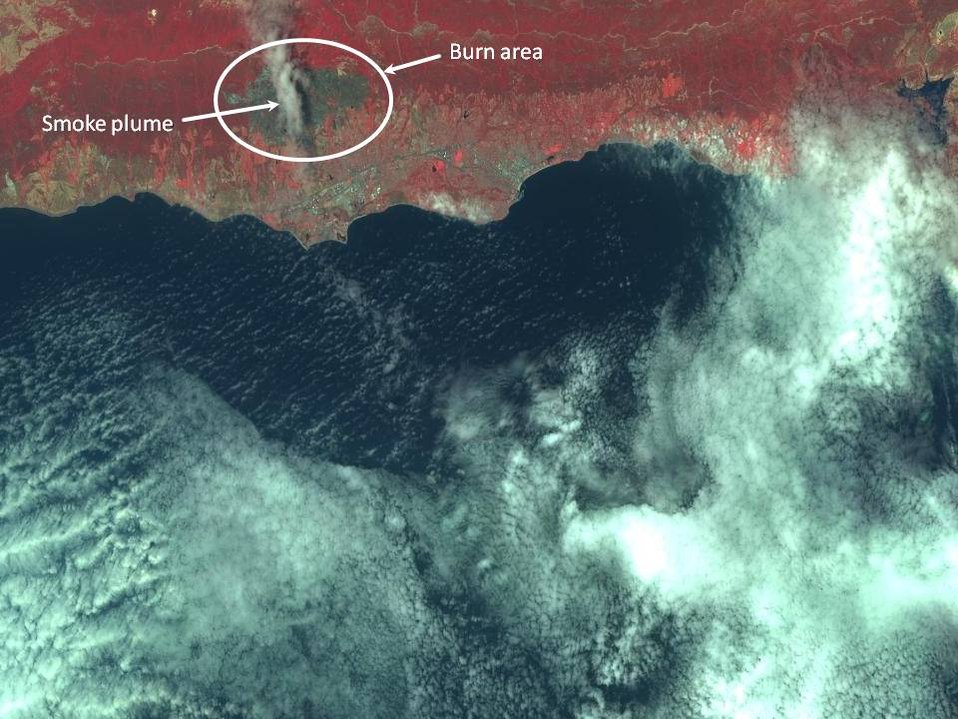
Intel system gains warfighting role

The Eagle Vision imagery collection system, managed by officials with the 950th Electronic Systems Group at Hanscom Air Force Base, Mass., uses commercial satellites to take snapshots of broad areas where homeland defense or operational action might be required. This imagery, taken by the system during the 2008 wildfires in Santa Barbara, Calif., shows active fires along with areas that have already burned.